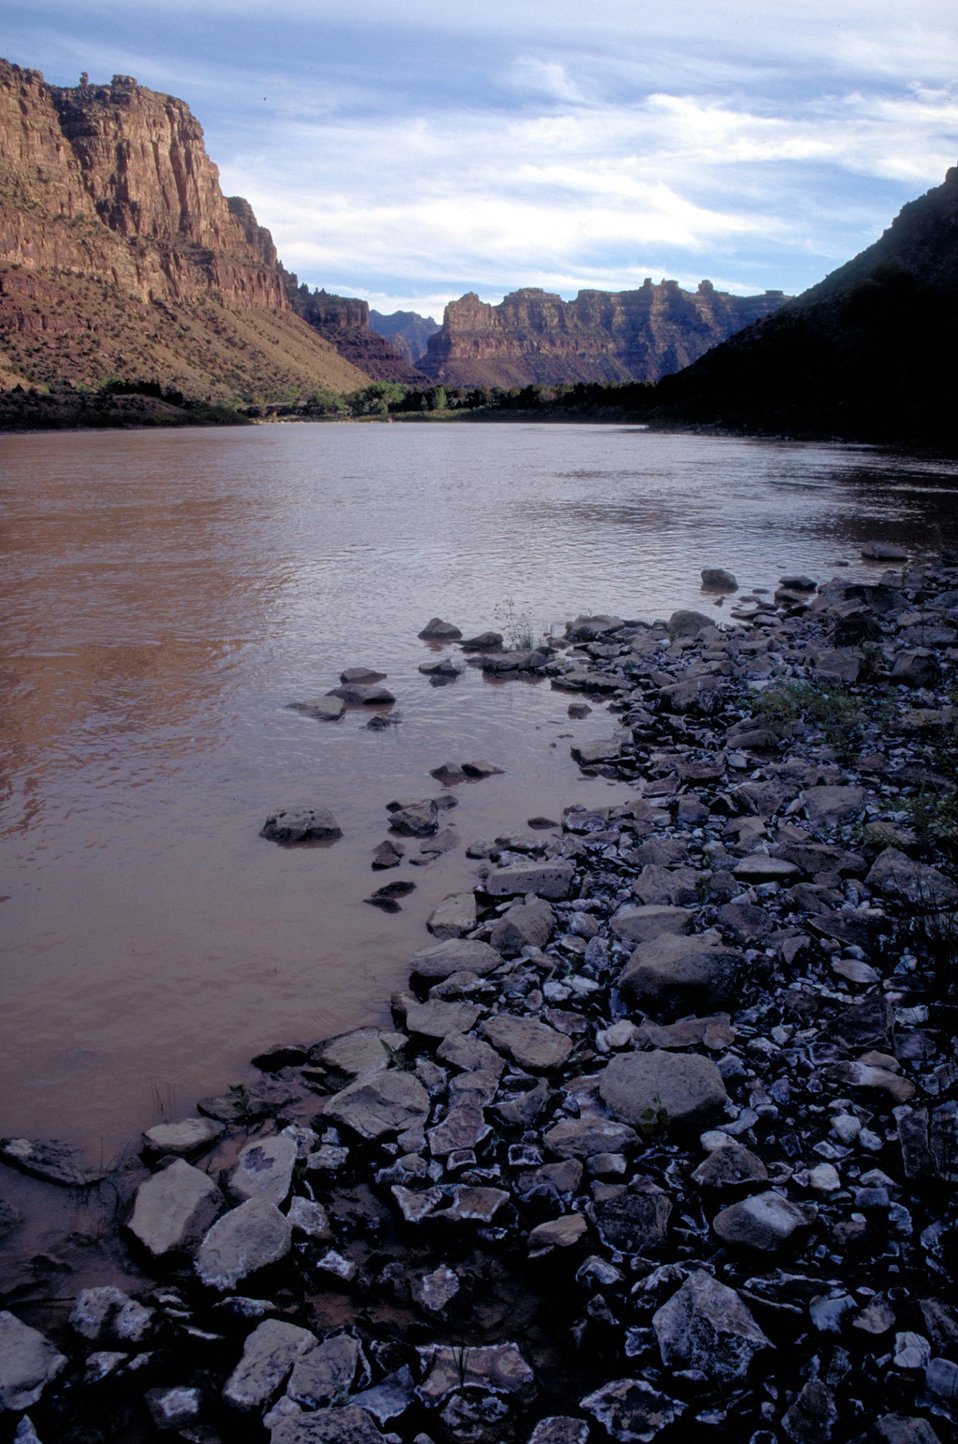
Desolation/Gray Canyons near Price, Utah.